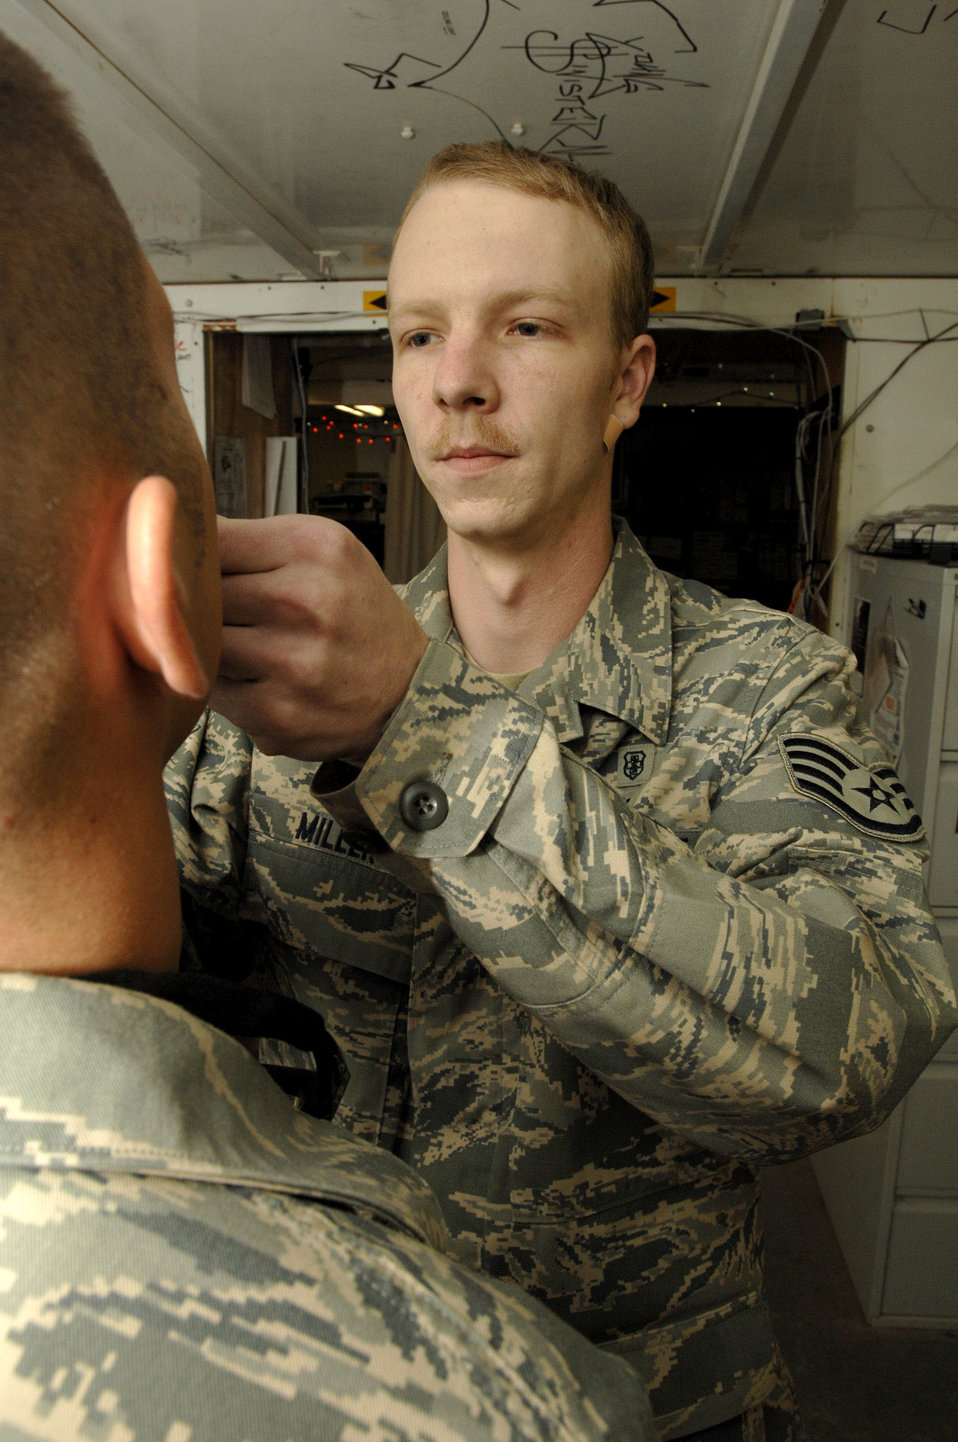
Show me where it hurts

Staff Sgt. Brian Miller administers flu mist to a patient Dec. 11 in the407th Expeditionary Medical Squadron Clinic at Ali Base, Iraq. Sergeant Miller is a medical technician and assists with vaccinations, minor procedures and documentation of medical care. Sergeant Miller is deployed from Seymour Johnson Air Force Base, N.C.